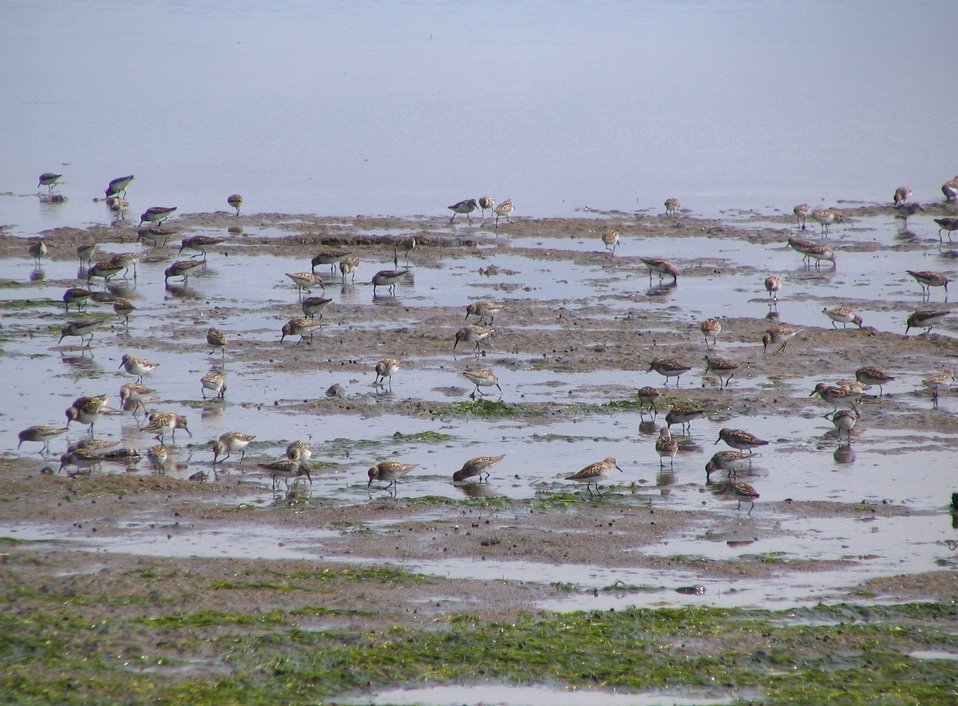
Western sandpipers and a few Rock sandpipers, Kinzarof Lagoon, Izembek National Wildlife Refuge